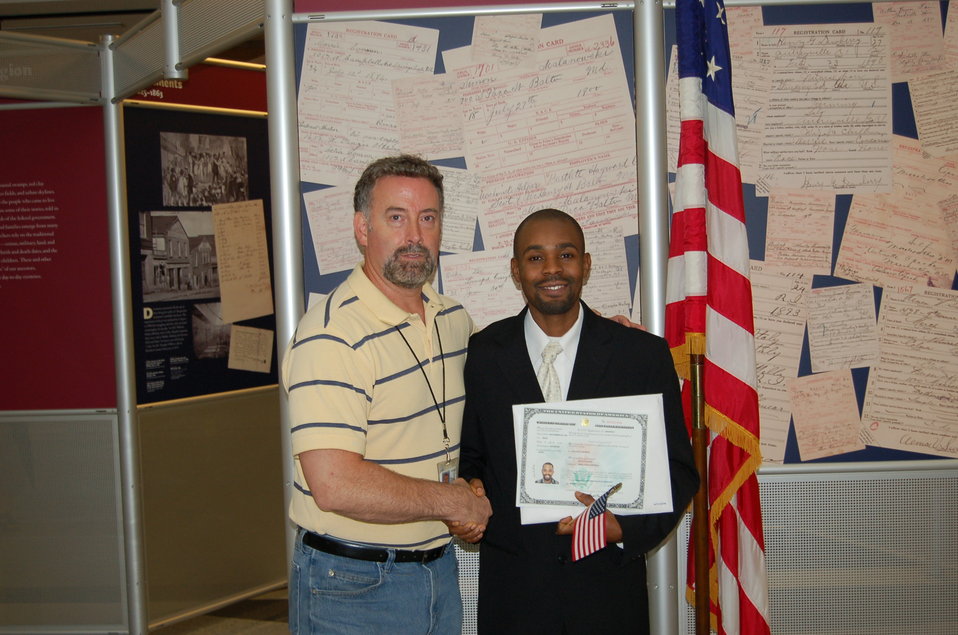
New Citizens